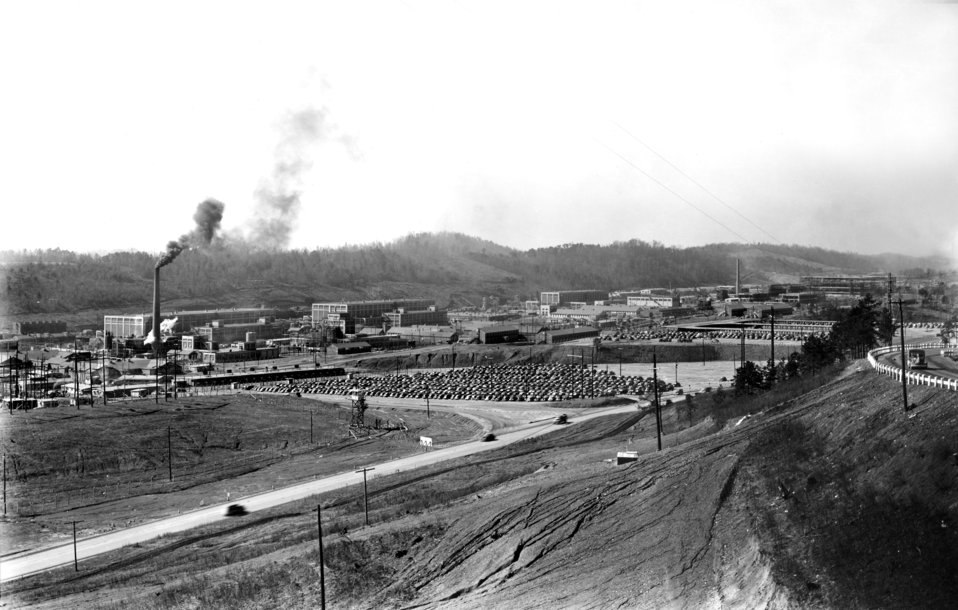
Panorama Y-12 Oak Ridge 1943

Y-12-23 DOE photo Ed Westcott 12-1943 From Reservoir Hill Oak Ridge Tennessee